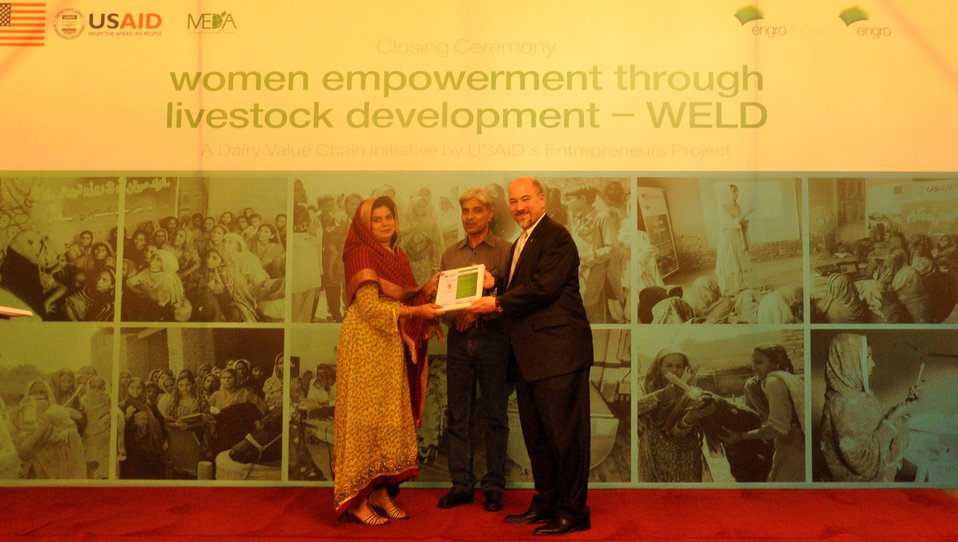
Successful completion of USAID’s Entrepreneurs Project - WELD

Mr. Leon S. Waskin, USAID’s Regional Director for Sindh, congratulated dairy farmers of Sindh and South Punjab on completion of Entrepreneurs Project